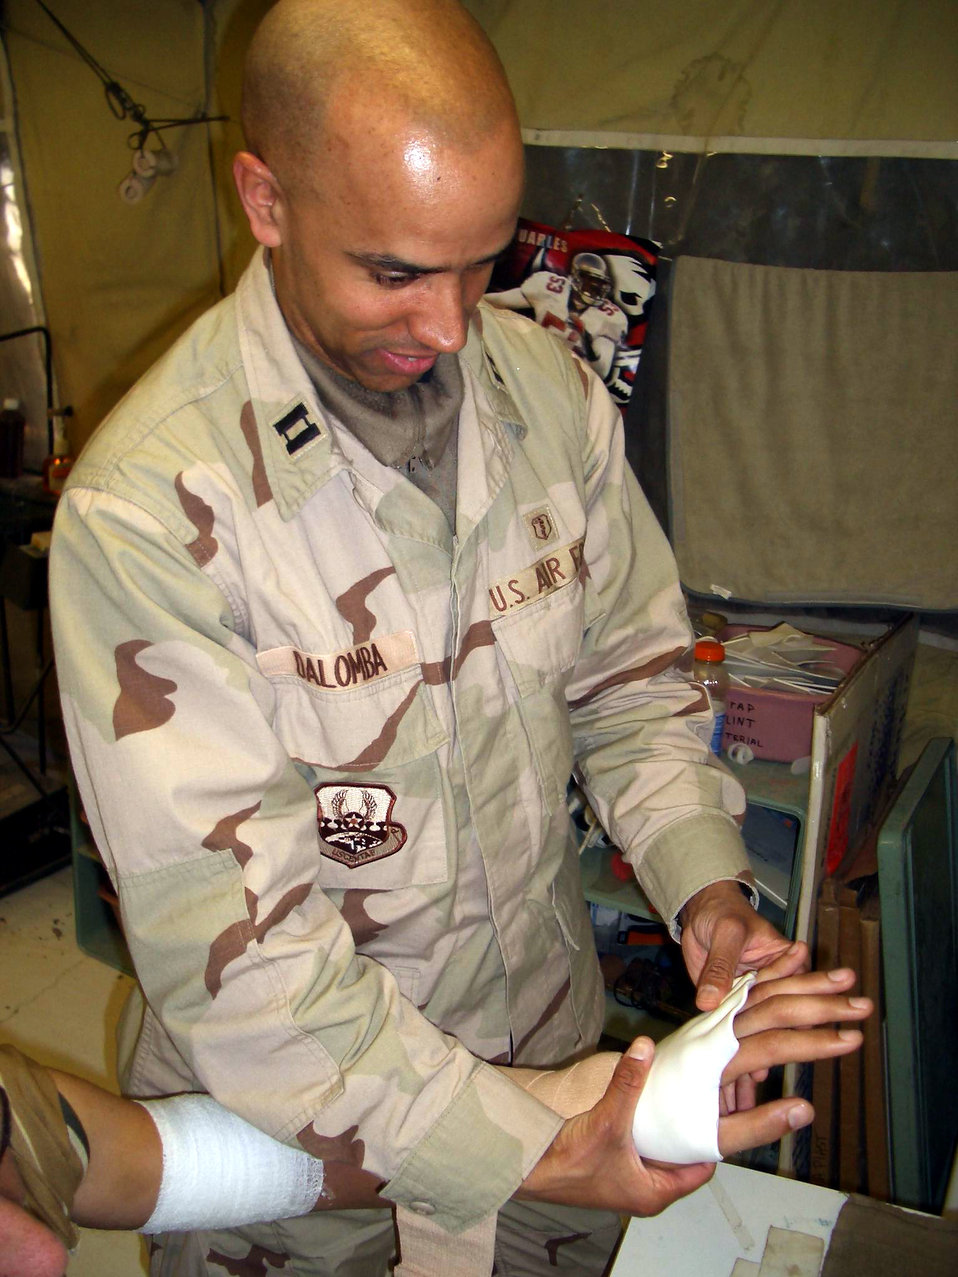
Physical, occupational therapy fixes strains and sprains

BALAD AIR BASE, Iraq -- Capt. John DaLomba places a hand splint on a patient at the physical and occupational therapy clinic here.